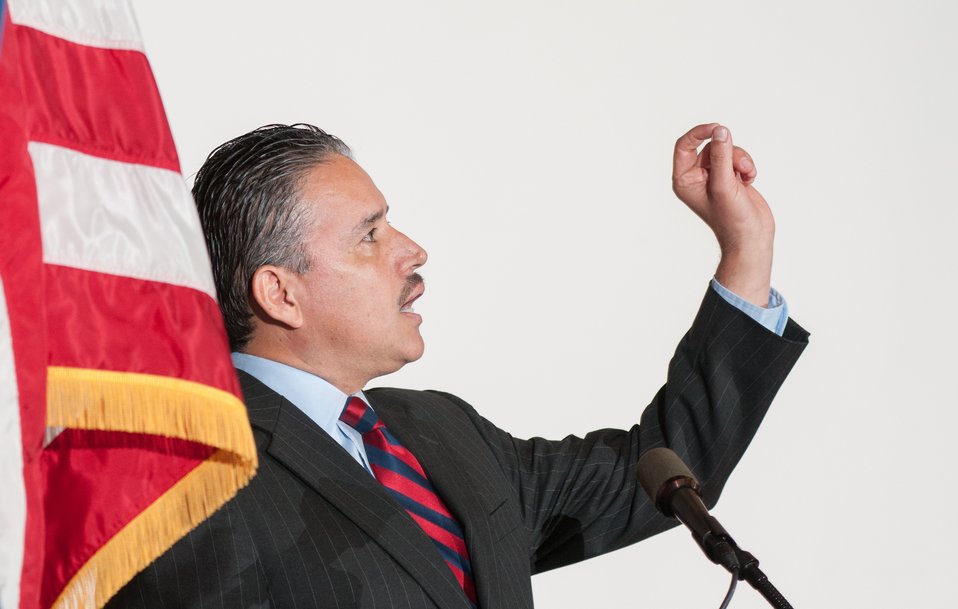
U.S. Department of Agriculture (USDA), Office of the Secretary (OSEC), Deputy Chief of Staff Oscar Gonzales speaks, during the USDA Asian Pacific American Heritage Month Observance, at the USDA headquarters in Washington, D.C., on Thursday, May 23, 2013. This year’s theme is “Building leadership; Embracing the Cultural Values and Inclusions.”